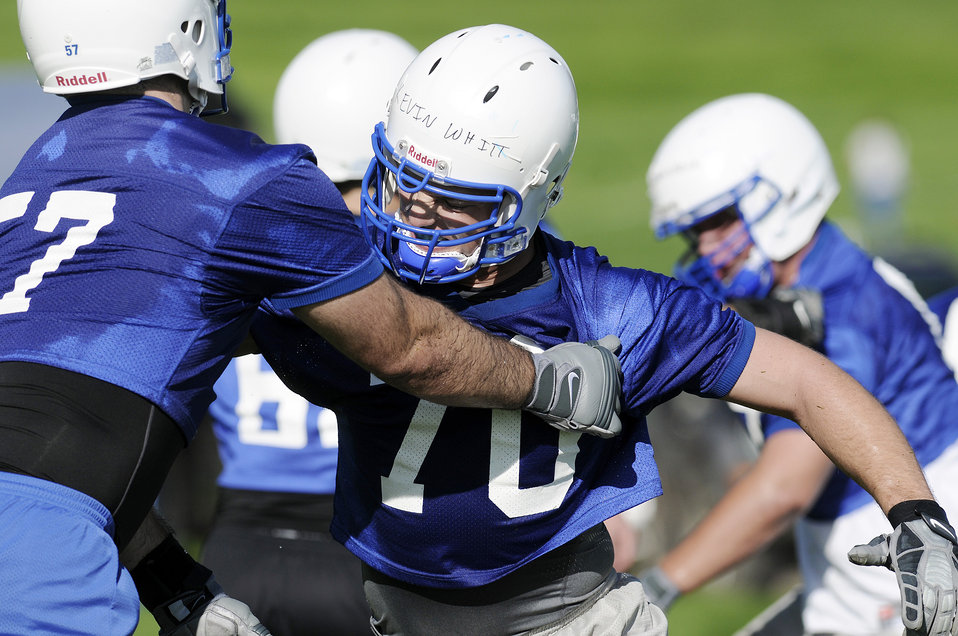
Academy football drills

Air Force Academy senior offensive linesman Nick Charles blocks sophomore Kevin Whitt during football practice Aug. 4 in day 2 of football practice at the Academy practice field. Charles was recently named a preseason first-team all-Mountain West Conference selection. The Falcons host the Nicholls State Colonels Sept. 5 in their home opener.